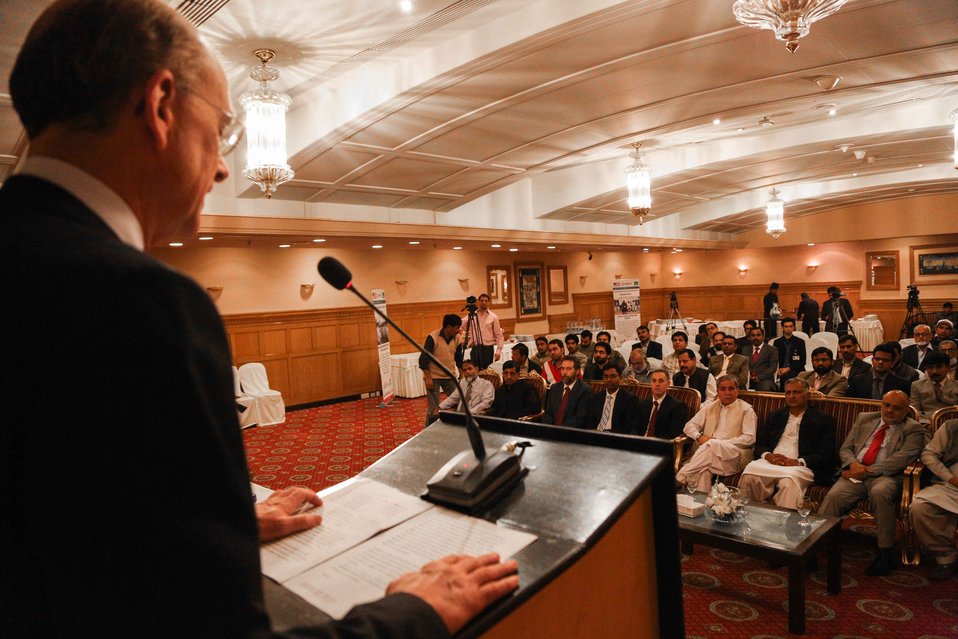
Michael Curtis Addressing the Audience